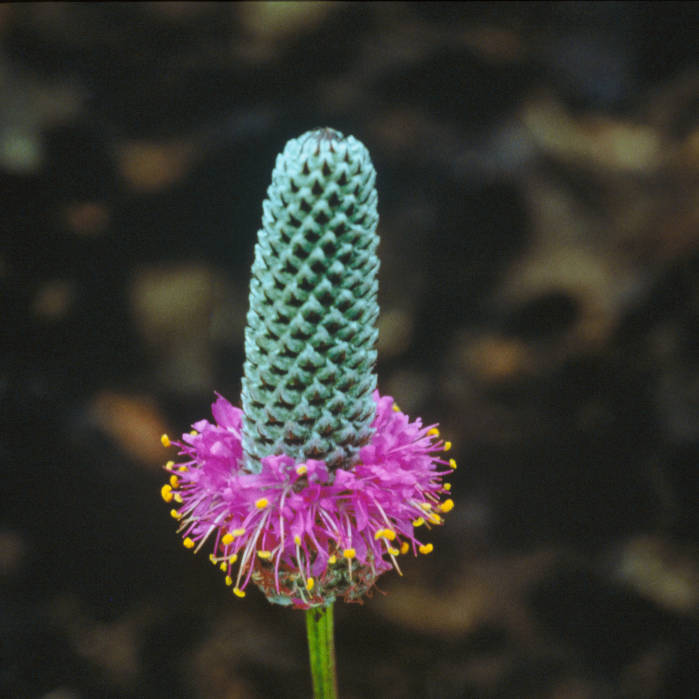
purple prairie clover

Wichita Mountains National Wildlife Refuge